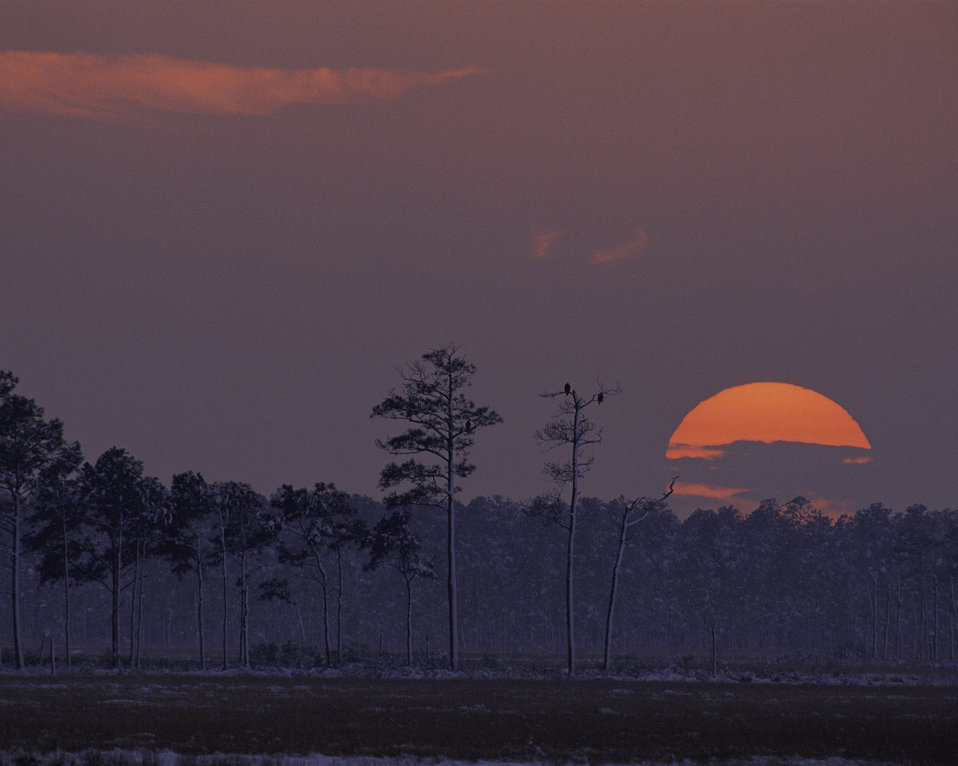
Blackwater National Wildlife Refuge